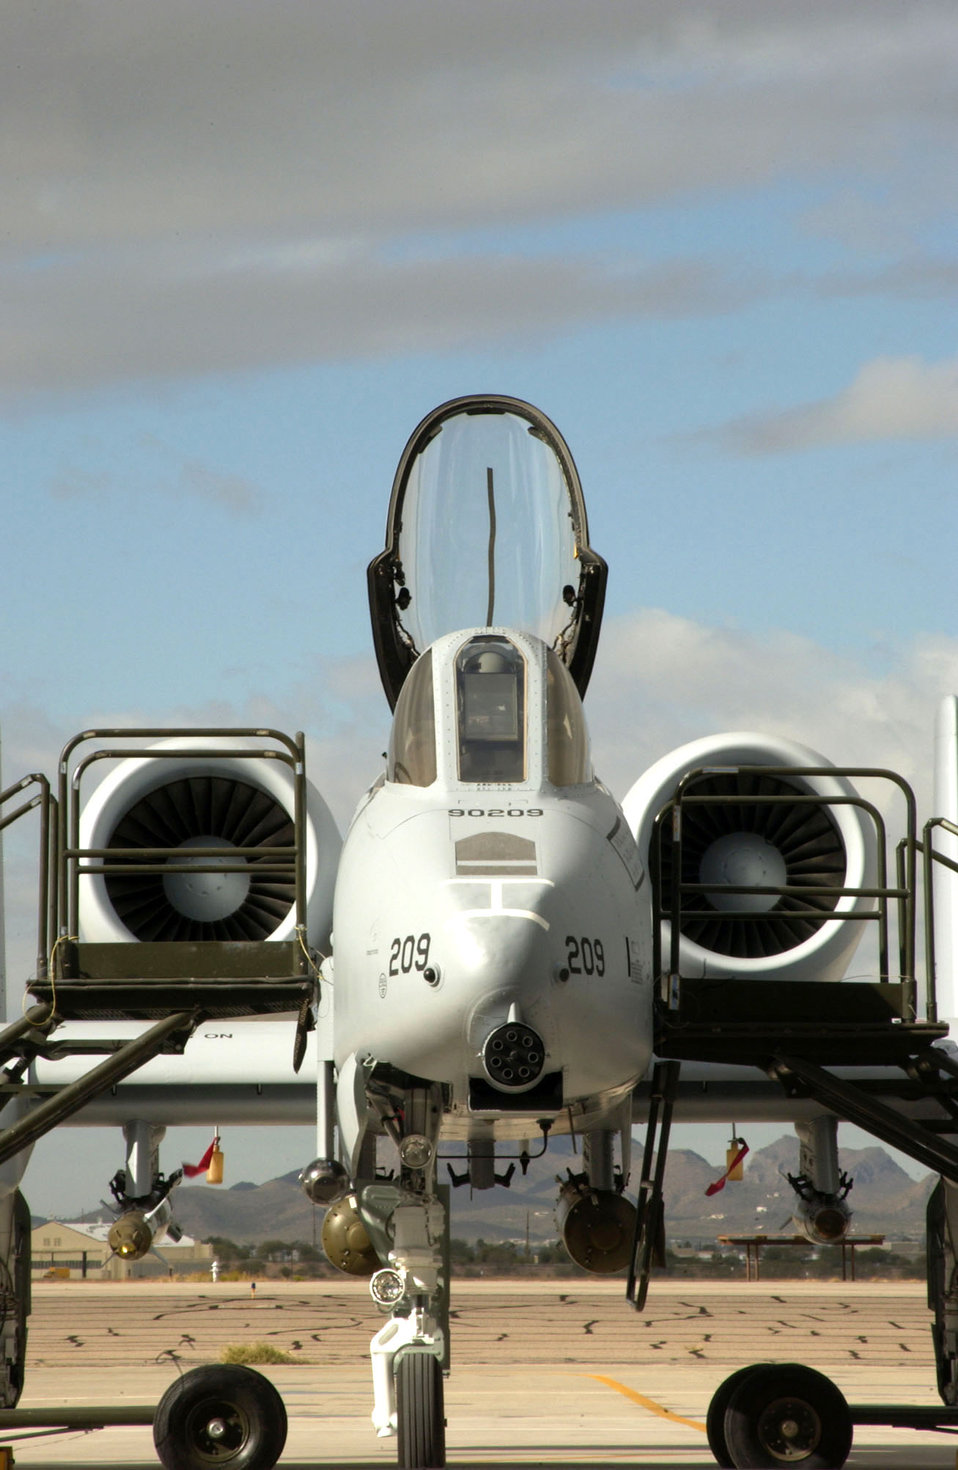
Enhanced A-10 arrives at Davis-Monthan

Airmen at Davis-Monthan Air Force Base, Ariz. welcome a newly modified A-10C Thunderbolt II during a roll-out ceremony Nov. 29. The A-10 has been modified with precision engagement technology to create the new and improved A-10C. The enhancements include full integration of sensors, multi-functional color displays and a new hands-on-throttle-and-stick interface.